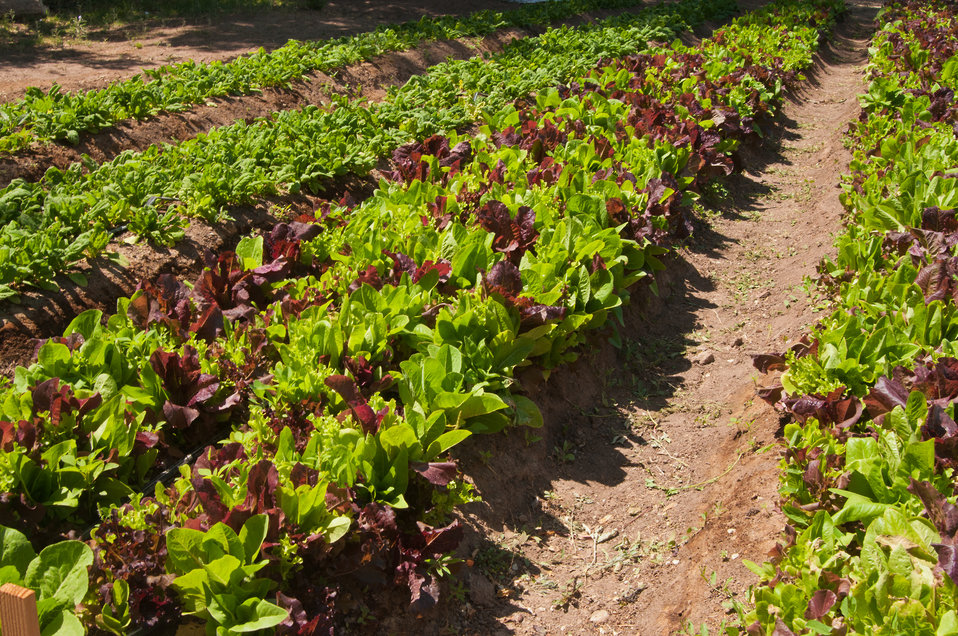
Lettuce grown on the Los Jardines Institute Farm, Albuquerque, NM. Los Jardines Institute Farm, a local sustainable farm, was able to acquire a loan from the La Montanita Co-op. La Montanita Co-op offers loans to local farmers and food producers for development. La Montanita Co-op is a 17,000 member socially responsible, locally owned food cooperative that supports a stable market for local farmers and producers of sustainable and organic regional/local agriculture in Albuquerque, NM. The co-op has a distribution center and two stores in Albuquerque; Valley and Nob Hill and stores in Santa Fe and Gallup, NM.